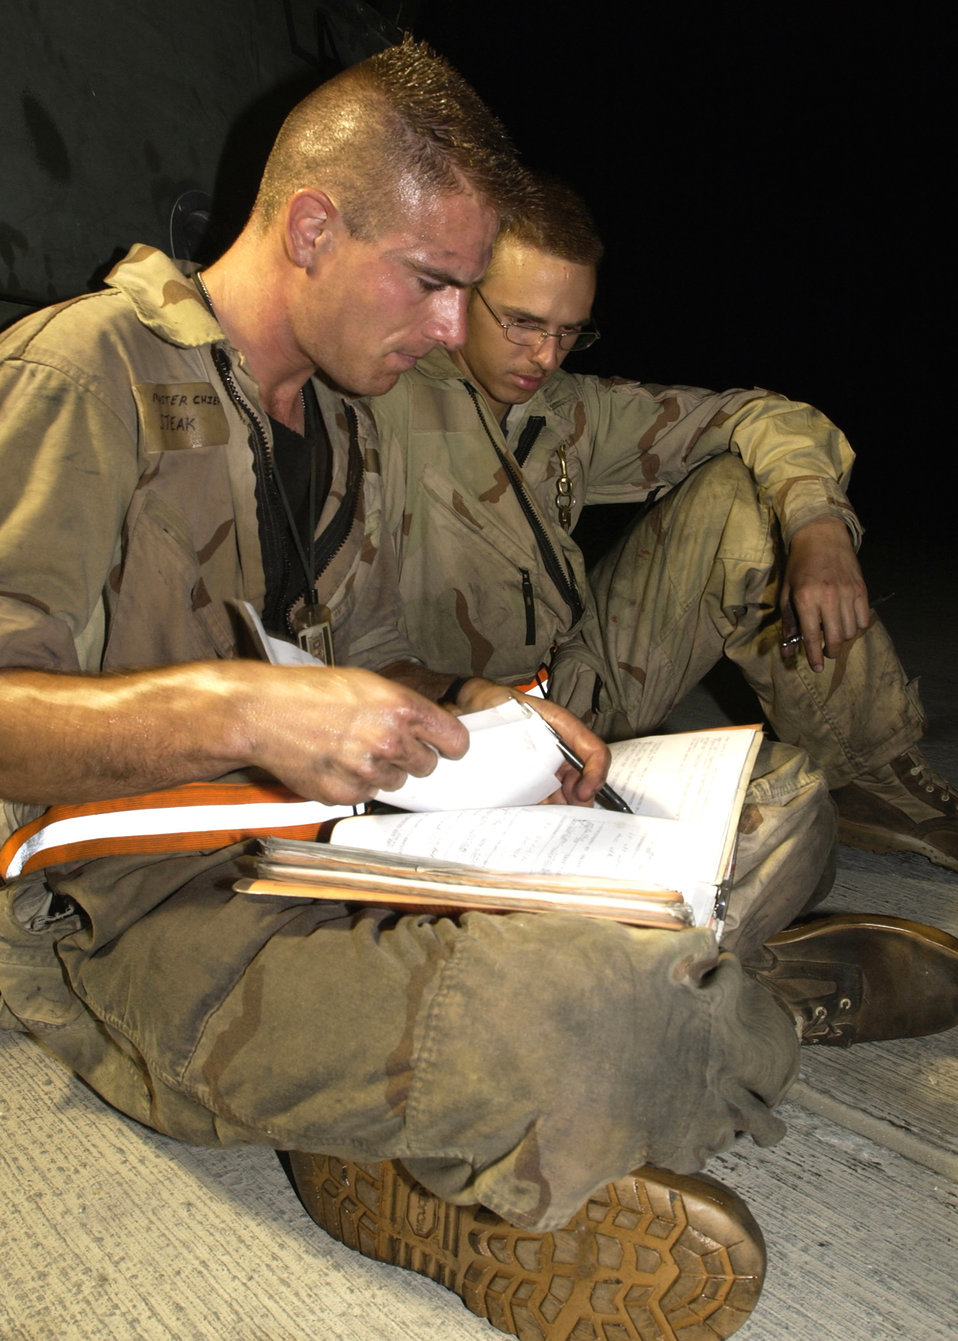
Record keeping

SOUTHWEST ASIA -- Staff Sgt. Joseph Salisbury (left) and Airman 1st Class Jason Campbell annotate the actions they took to correct aircraft maintenance discrepancies found on an F-15E Strike Eagle. Both airmen are crew chiefs with the 391st Expeditionary Aircraft Maintenance Unit at a forward-deployed location.